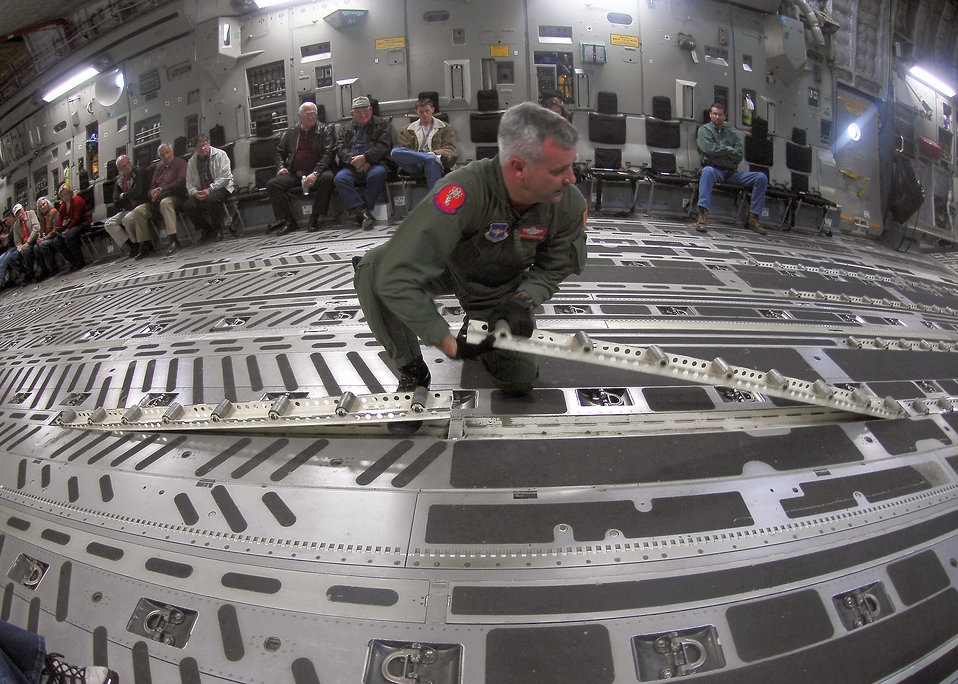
Altus community members spend time in sky

Senior Master Sgt. Brian Williams, a loadmaster from the 58th Airlift Squadron at Altus Air Force Base, Okla., turns over rollers on the floor of a C-17 Globemaster III for guests receiving an orientation flight Nov. 14 as part of the Farm-City community outreach program. These rollers are used to move pallets in and out of the aircraft.